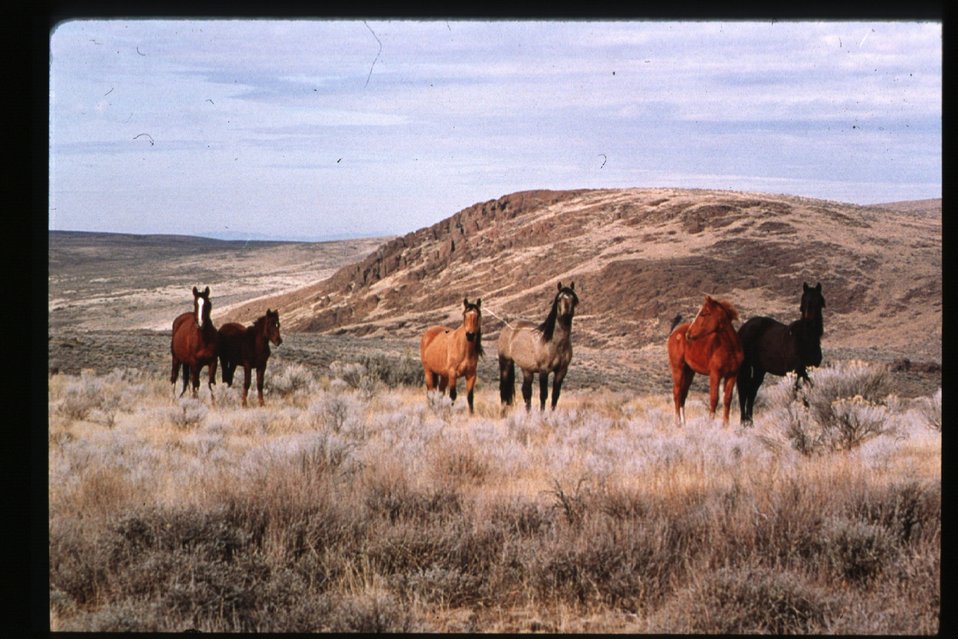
Wild Horses Wild Horse and Burro Adoptions Program Owyhee Field Office Boise Corrals Lower Snake River District LSRD